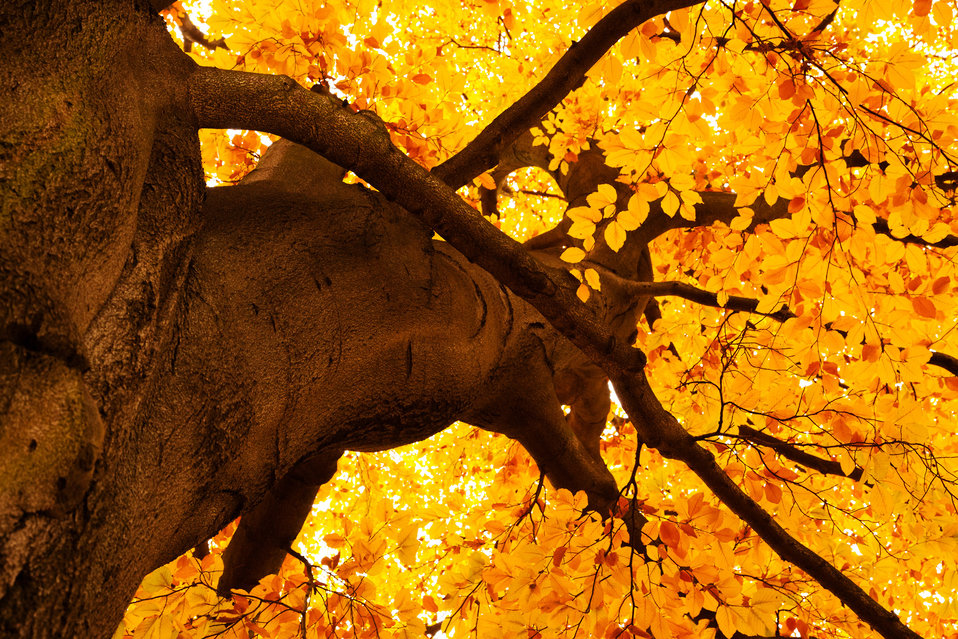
Yellow tree in autumn

Yellow leaves on a tree in autumn.